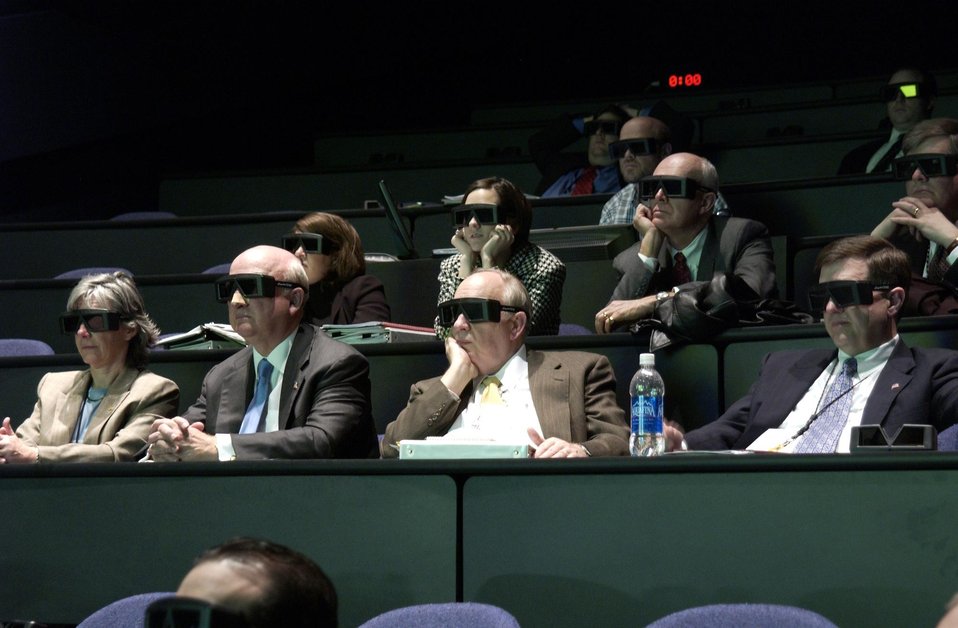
SECRETARY OF ENERGY SAMUEL BODMAN IN THE VISUALIZATION THEATER AT THE METROPOLIS CENTER FOR MODELING AND SIMULATION, LOS ALAMOS NATIONAL LABORATORY.

IN ORDER TO PROPERLY VIEW THE 3-D PRESENTATIONS ON THE SCREEN, VIEWERS MUST WEAR 3-D STEREO IMAGING GLASSES. SEATED NEXT TO THE SECRETARY ARE LINTON BROOKS, ADMINISTRATOR OF THE NATIONAL NUCLEAR SECURITY ADMINISTRATION AND PETE MANOS, DIRECTOR LANL. ON FEBRUARY 25, 2005, THE SECRETARY ALSO TOURED THE LABORATORY, RECEIVED BRIEFINGS ON LAB PROGRAMS AND VISITED VARIOUS FACILITIES.